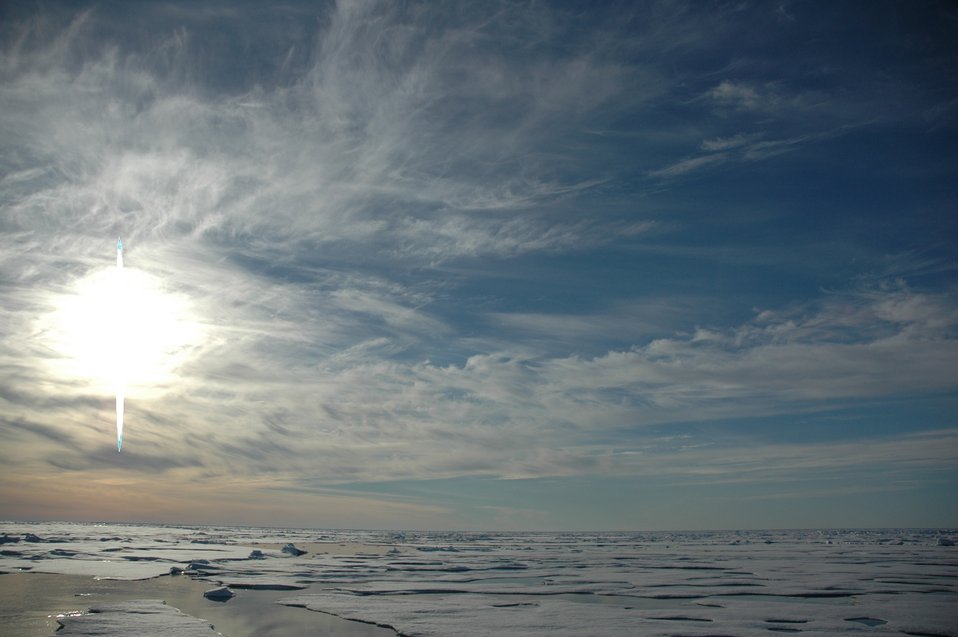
Midnight sun, melting Arctic ice, open leads, and cirrus clouds.